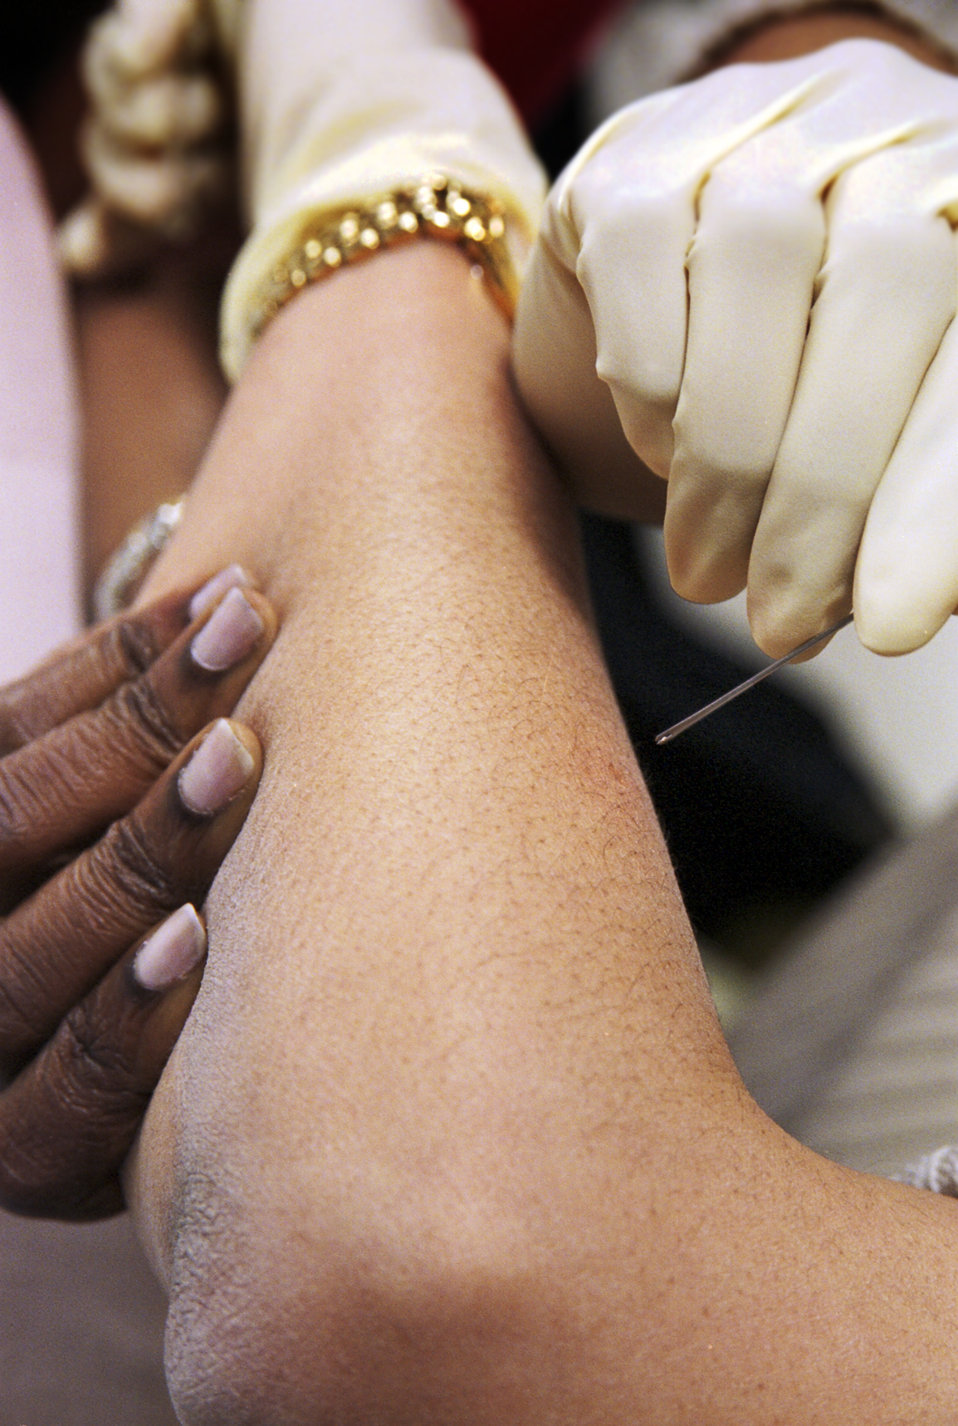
CDC Clinician demonstrates the use of a bifurcated needle during the 2002 Smallpox Vaccinator Workshop.